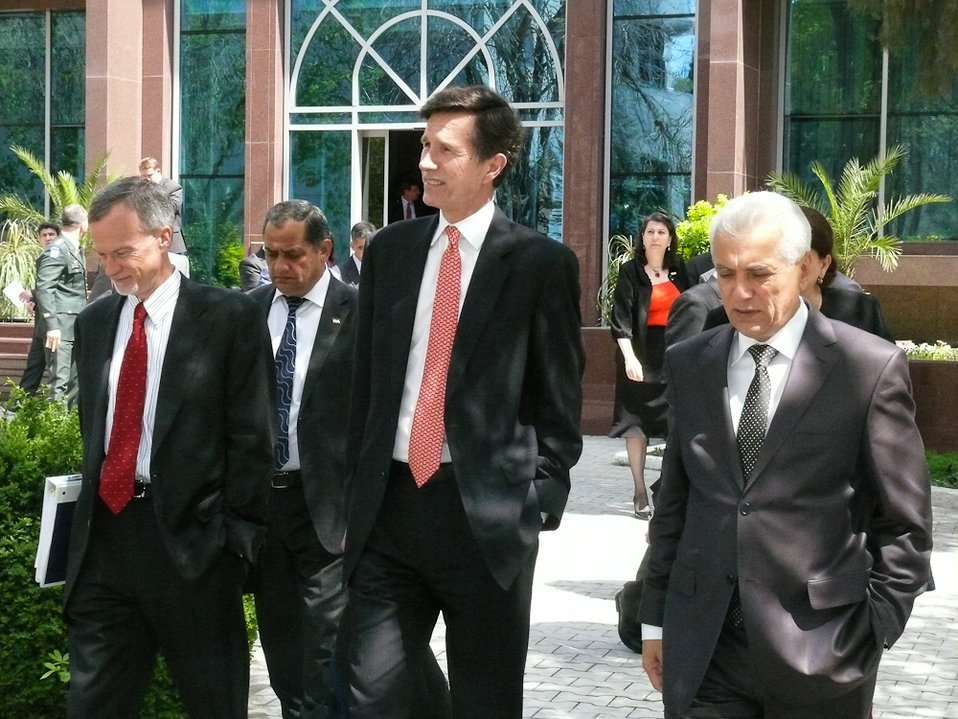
Assistant Secretary Blake Leads U.S. Government-Interagency Delegation to U.S.-Tajikistan Annual BIlateral Consultations

U.S. Assistant Secretary of State for South and Central Asian Affairs, Robert O. Blake, Jr. leads the U.S. government-interagency delegation to the second U.S. - Tajikistan Annual Bilateral Consultations in Dushanbe, Tajikistan, April 11 - 12, 2011. [Damian Wampler/ State Department photo/ Public Domain]